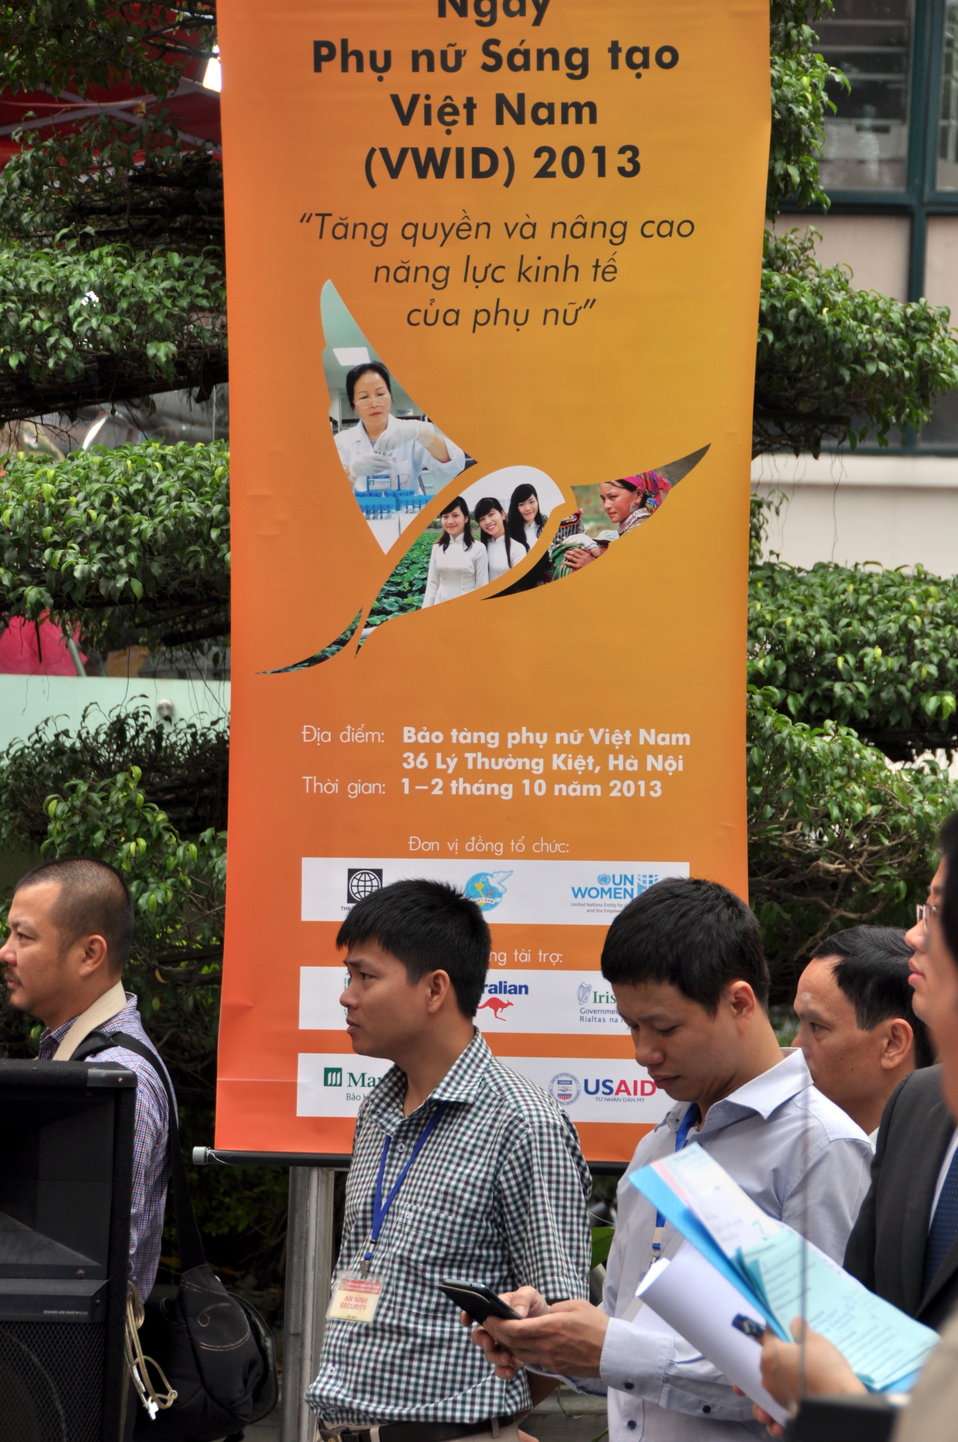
Vietnam Women Innovation Day 2013

Hanoi, October 1, 2013.